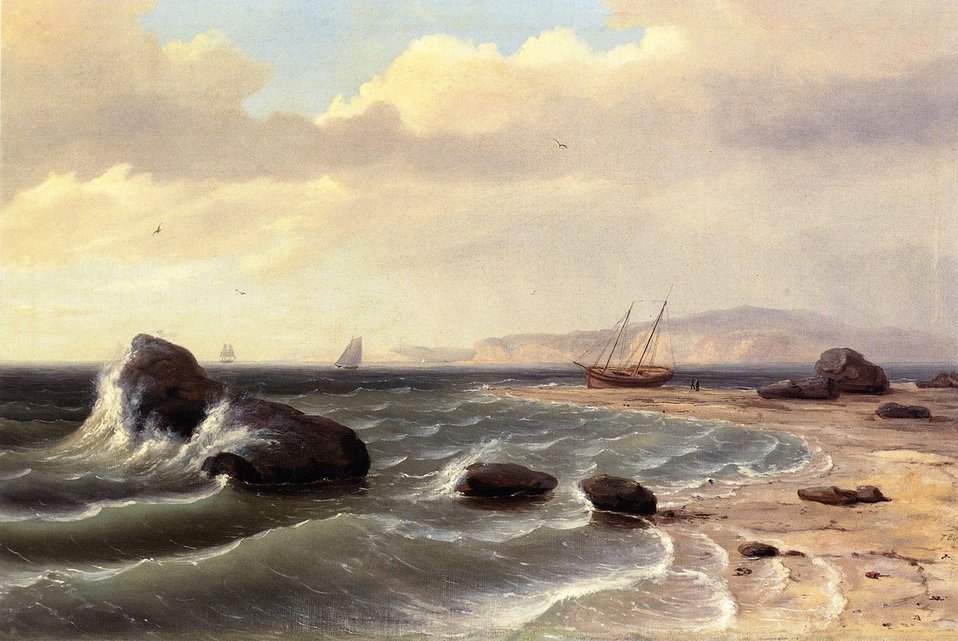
'An American Shore Scene' by Thomas Birch, 1827